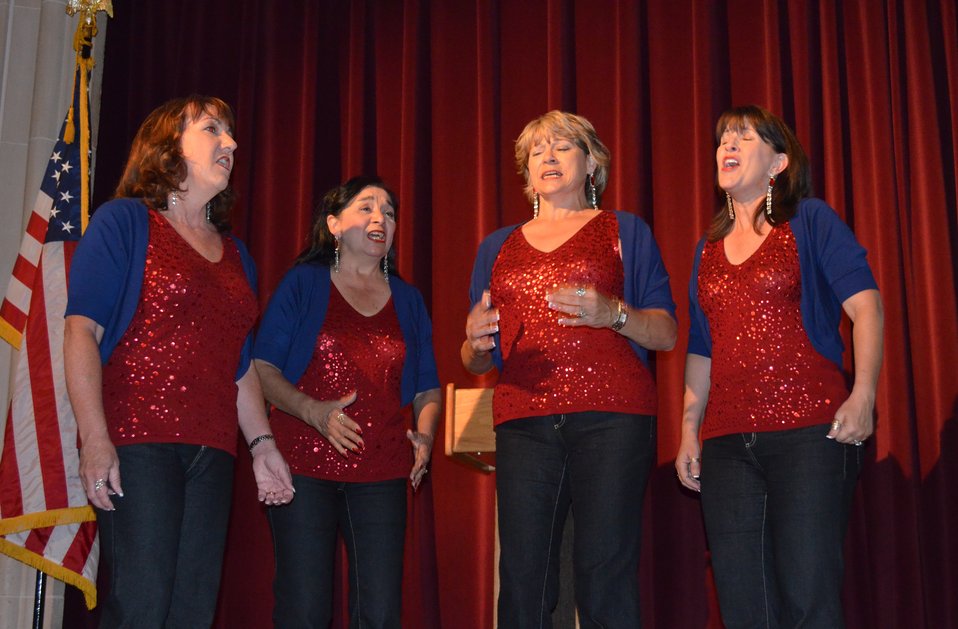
The Star Spangled Banner

The U.S. Army Corps of Engineers Sacramento District's Lynne Erickson joined friends to represent the Corps at the 2nd Annual Battle at the Capital, singing 'The Star Spangled Banner' at an opening dinner banquet in Lincoln, Calif., Aug. 29. Battle at the Capital is a benefit football and golf invitational to support wounded warriors. Erickson (third from the left) is a member of the district's Corps-a-Liers choir. (U.S. Army Photo/DeDe Cordell)
www.battleatthecapital.com/

Watch them sing on YouTube:
bit.ly/mQ9EiF